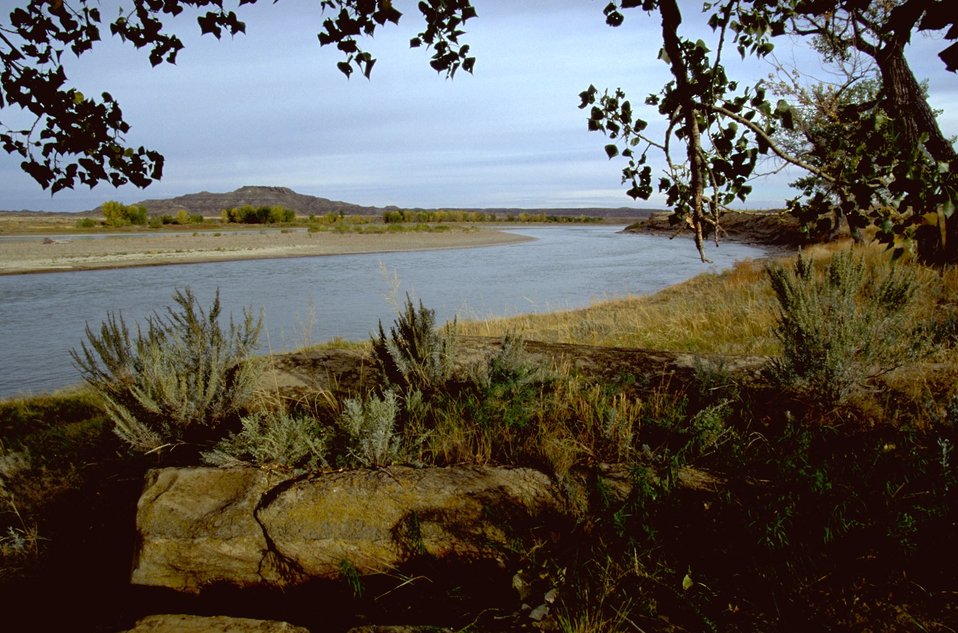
Plant life along the Yellowstone River - Sheridan Butte in the background